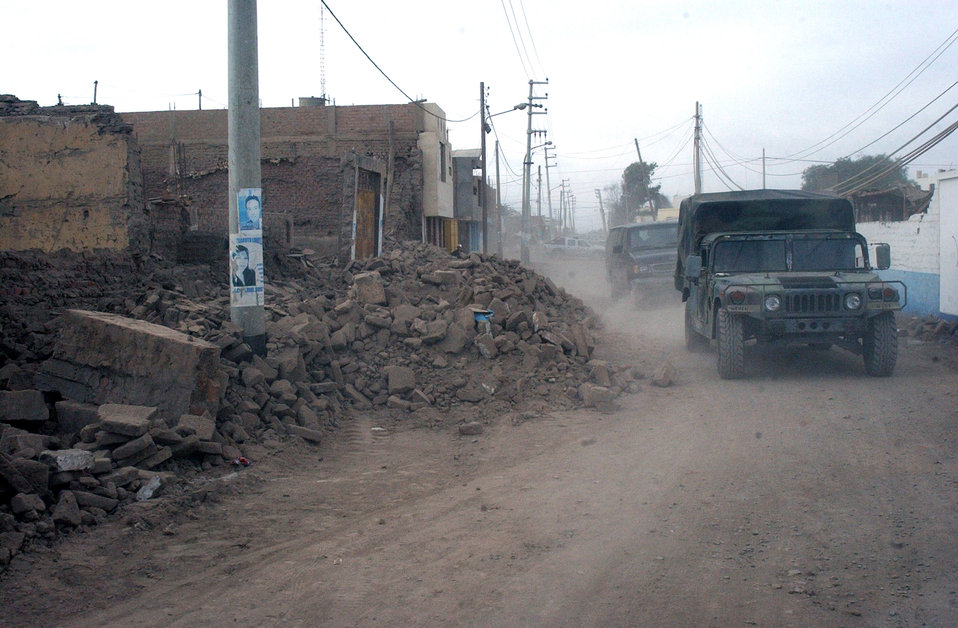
Relief in Peru

Joint Task Force-Bravo's medical humanitarian relief task force members make their way throught the streets of Pisco, Peru, Aug. 21. The task force set up a pharmacy in the town, and doctors treated patients for ailments such as gastro-intestinal illness and respiratory infections. The task force treated more than 1,500 people during their deployment to Peru, following the 8.0 magnitude earthquake that struck the region Aug. 15.